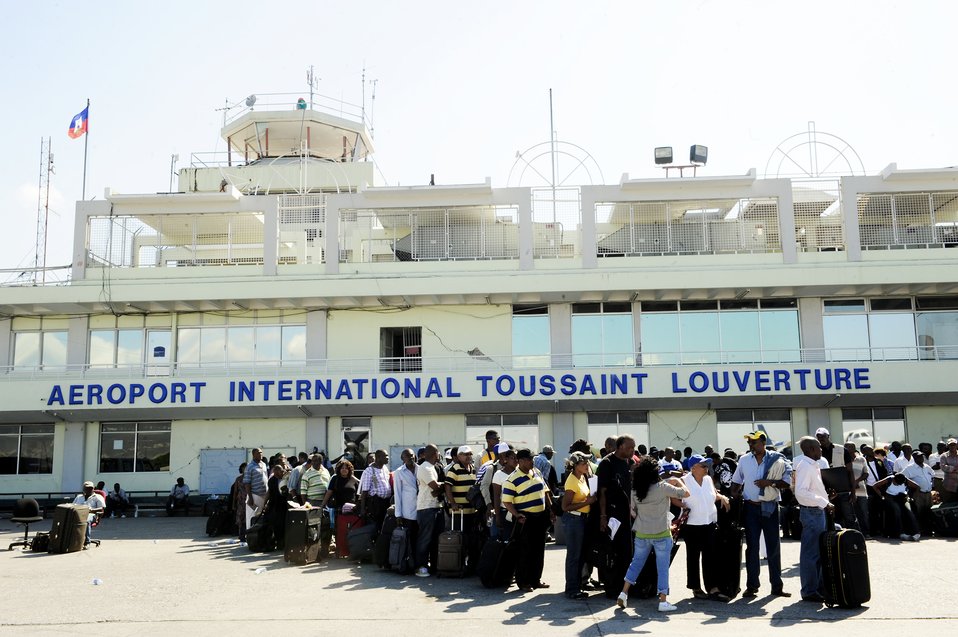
Haiti earthquake relief

People wait at the Port-Au-Prince airport in Haiti for transport back to their respective countries Jan. 15, 2010. Department of Defense assets have been dispatched to Haiti to assist with humanitarian assistance and disaster relief after a magnitude 7 earthquake hit the country Jan. 12, 2010.